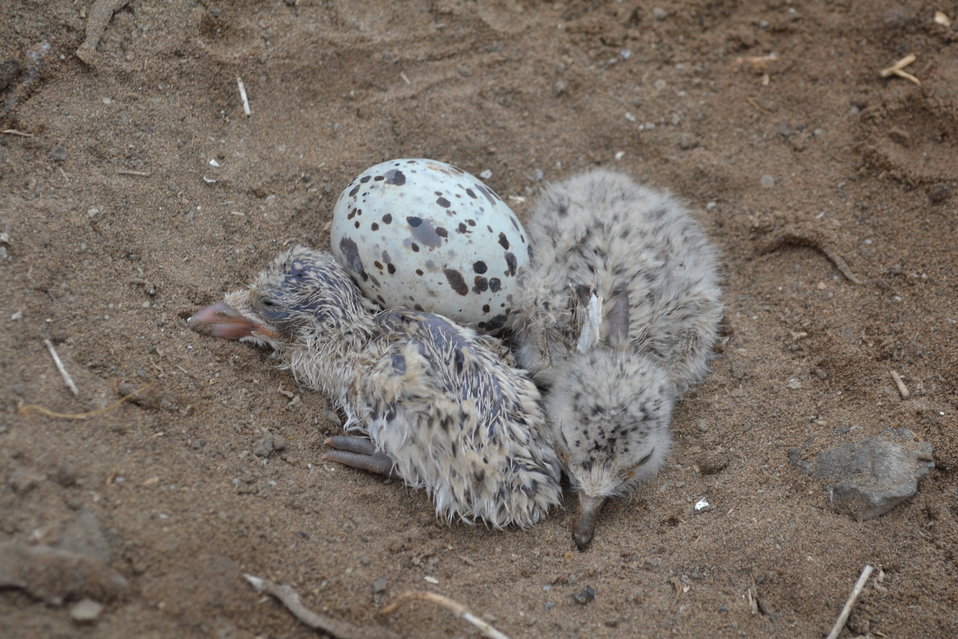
Black skimmer (Rynchops niger) hatchlings